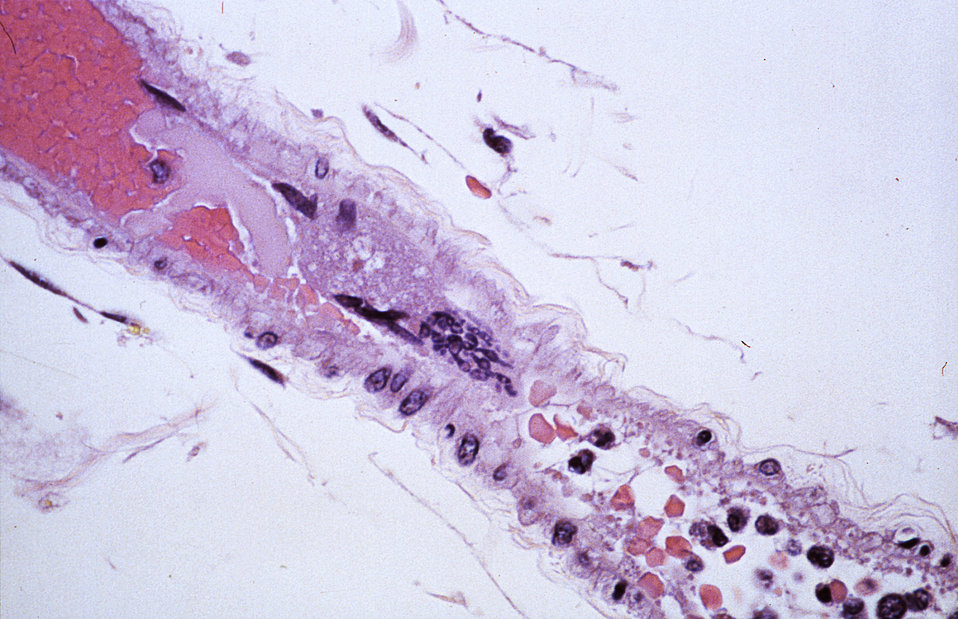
This photomicrograph revealed some of the cytoarchitectural histopathologic changes associated with a Nipah virus infection, in this particular human tissue specimen, revealed by the formation of a vascular syncytial cell, i.e., giant, multinucleated endothelial cell, in the center of the image.